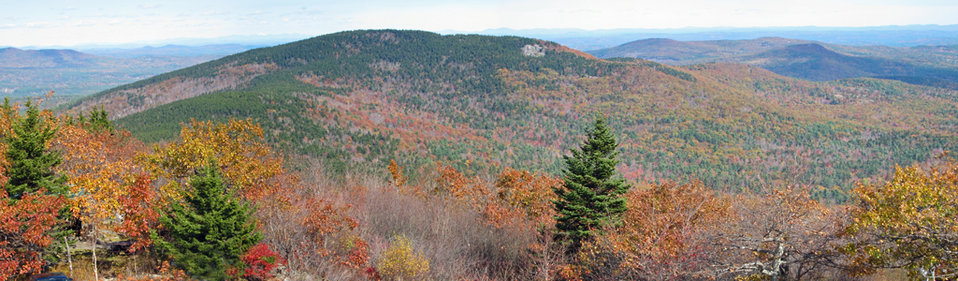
Wapack National Wildlife Refuge

The view from the top of Wapack National Widllife Refuge in Temple, New Hampshire.